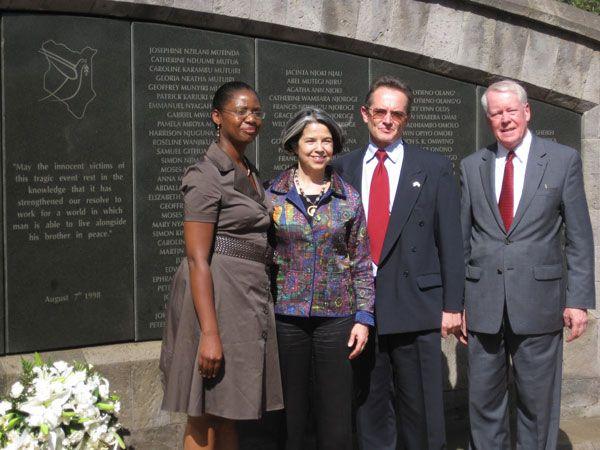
Under Secretary Otero and Ambassador Ranneberger at Polytechnic University Town Hall Meeting

Under Secretary of State for Democracy and Global Affairs Maria Otero and U.S. Ambassador to Kenya Michael E. Ranneberger speak at a Town Hall meeting at Polytechnic University in Nairobi, Kenya, January 28, 2010.